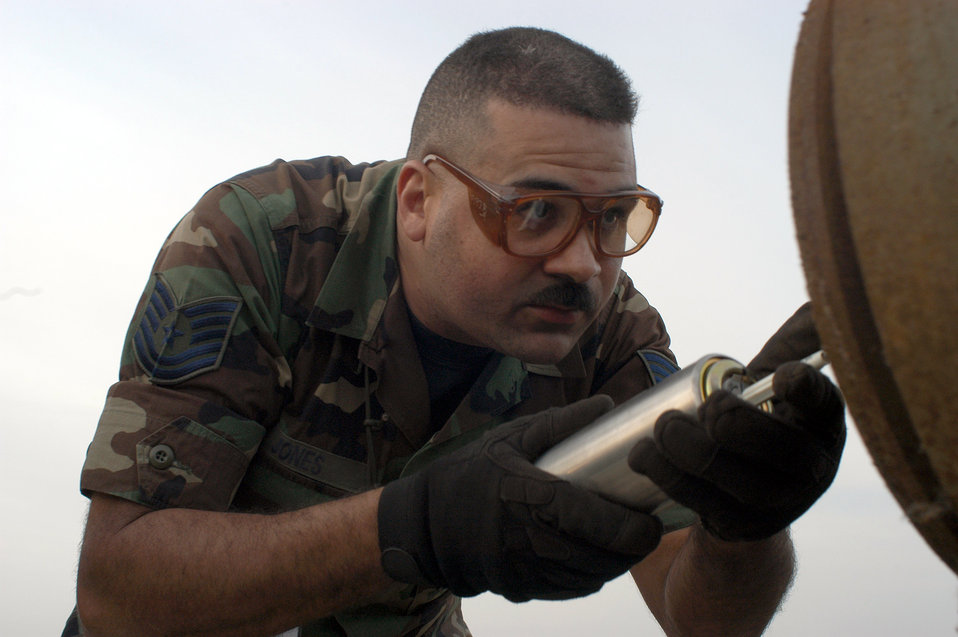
Jones

OPERATION IRAQI FREEDOM -- Tech. Sgt. Douglas Jones, munitions troop with the 5th Expeditionary Maintenance Squadron, loads a fuse into a GBU-31 joint direct attack munition.